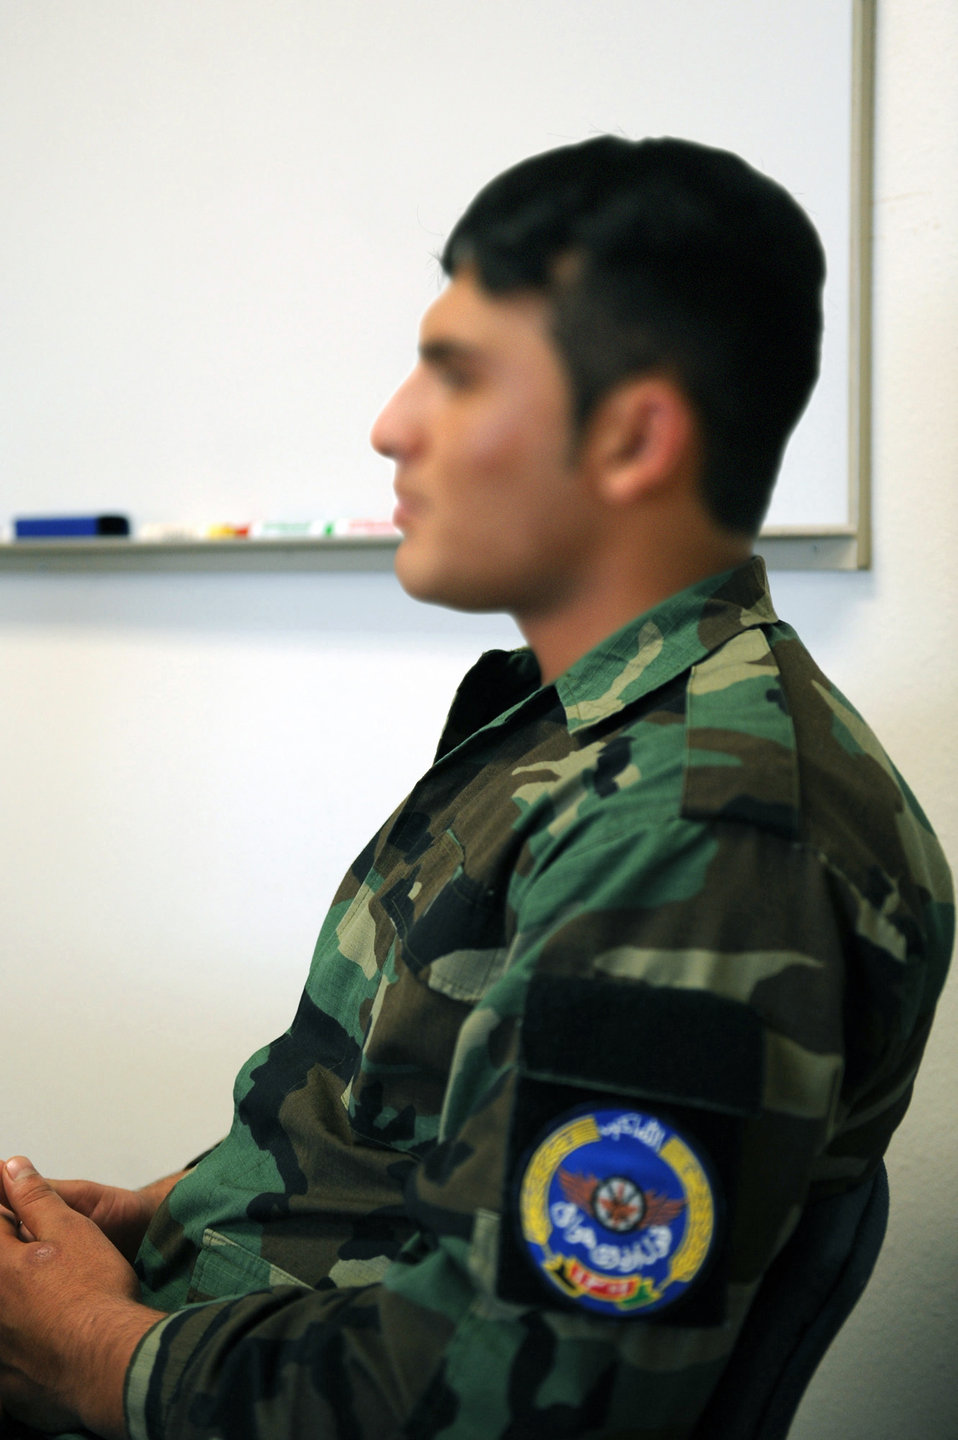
Language Institute's mission reaches for the future

Afghanistan air force Major Khial Mohammad discusses how important it is to learn the English language at the Defense Language Institute at Lackland Air Force Base, Texas.